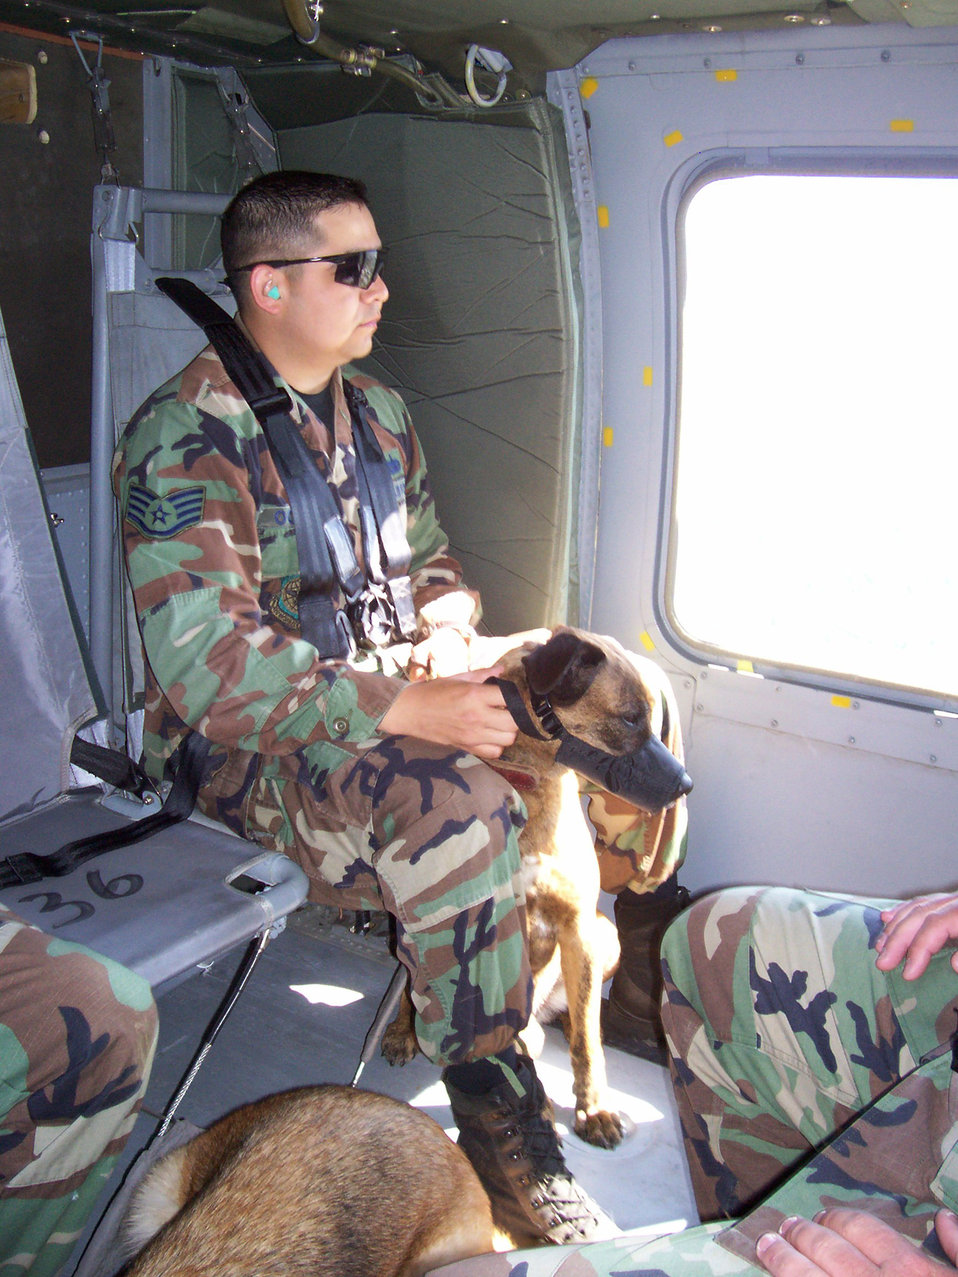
Airmen with a nose for danger

Staff Sgt. Mark Ochoa sits with his military working dog, Borek, during a Blackhawk flight. The handlers and their dogs were students in the U.S. Air Force Expeditionary Center's Phoenix Warrior Course at Fort Dix, N.J. The flight in the helicopter helped condition the dogs to boarding and flying in a helicopter before they had to do that while deployed to Southwest Asia. Sergeant Ochoa is a security forces Airman with the 319th Security Forces Squadron at Grand Forks Air Force Base, N.D.